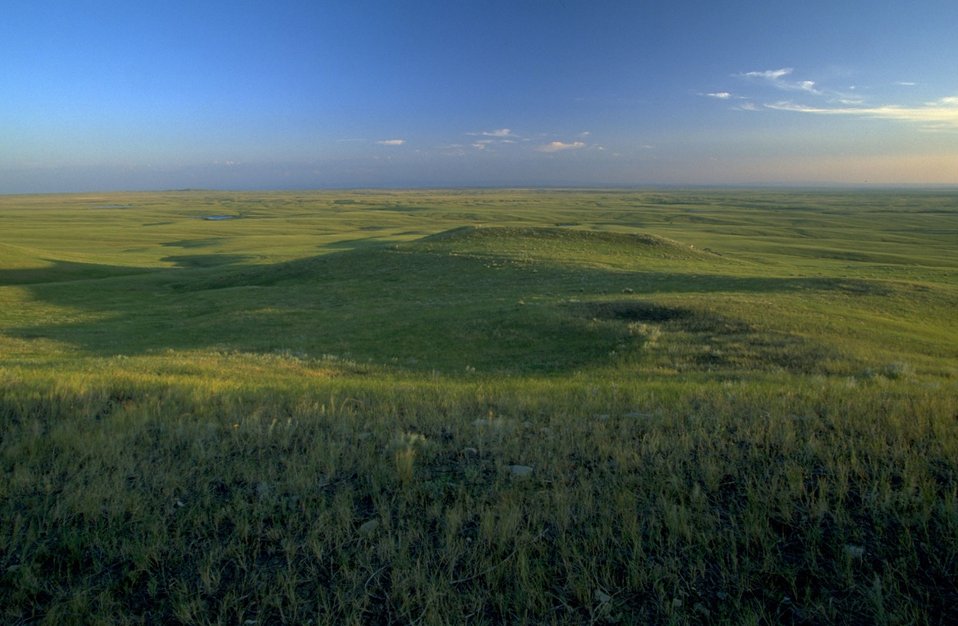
Grassland Vista 35 miles north of Belle Fourche